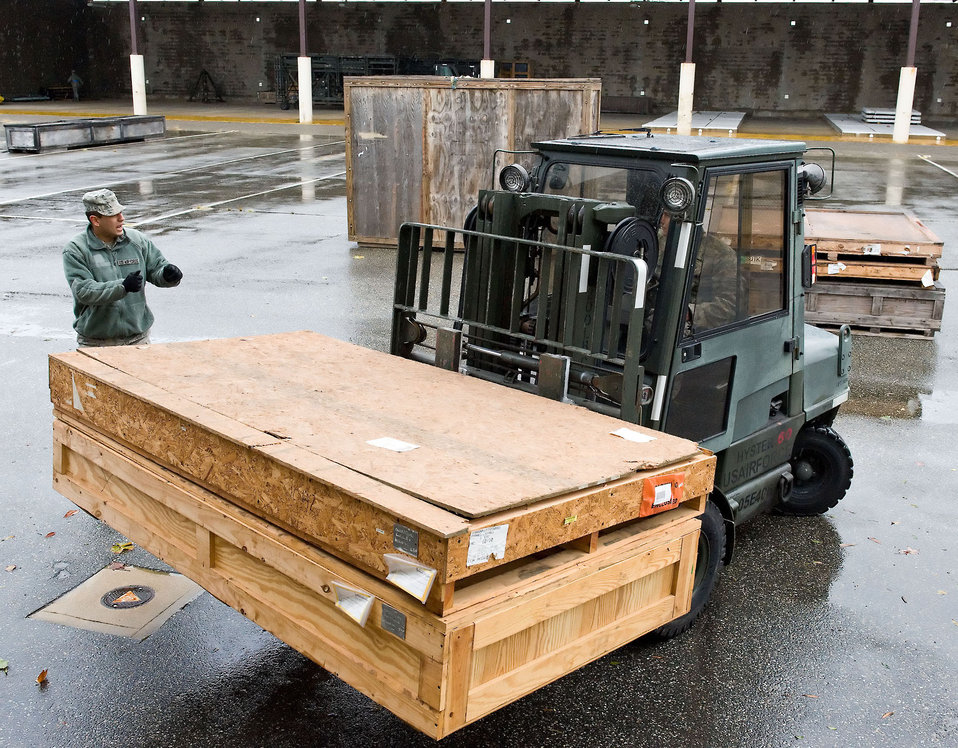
Dover Air Force Base prepares

Members of the 436th Logistics Readiness Squadron reposition supply assets to outside covered storage facilities Oct. 30, 2012, at Dover Air Force Base, Del. Assets normally stored outside were brought in prior to Hurricane Sandy’s arrival.